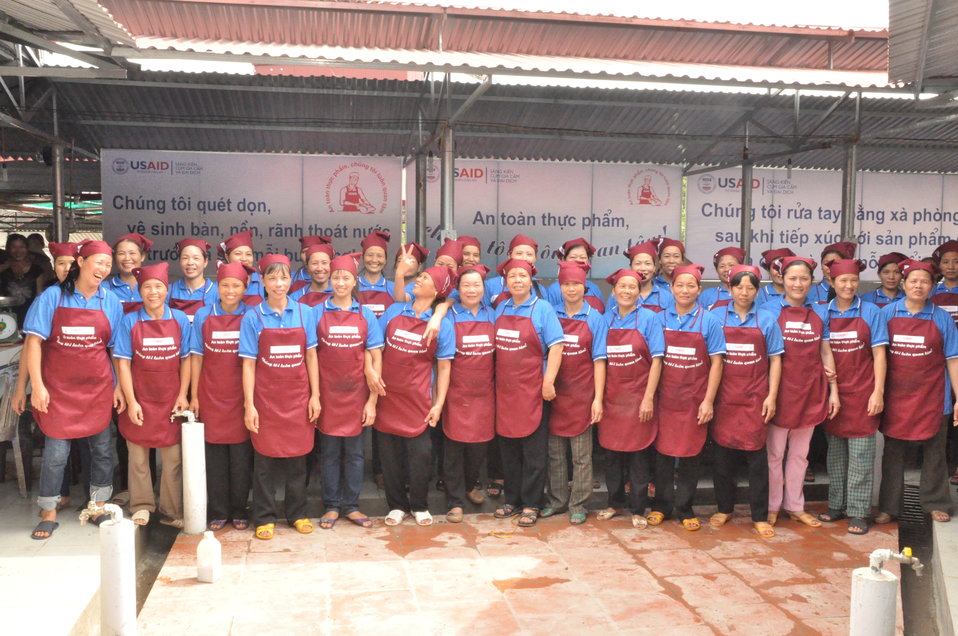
Handover Ceremony Hoa Mac Market Ha Nam

October 26, 2012